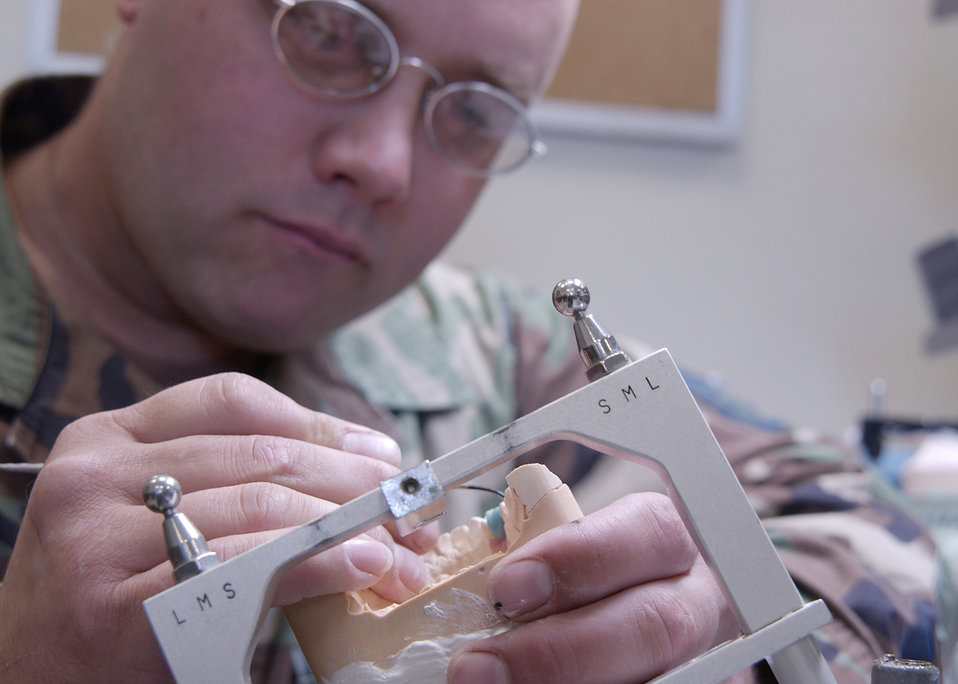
Armed to the teeth

Staff Sgt. Kasey Varvel creates a porcelain dental crown for a patient at Davis-Monthan Air Force Base, Ariz., on Aug. 10. The 355th Dental Squadron provides services for more than 7,000 active-duty Airmen at Davis-Monthan so that they may remain mission ready.